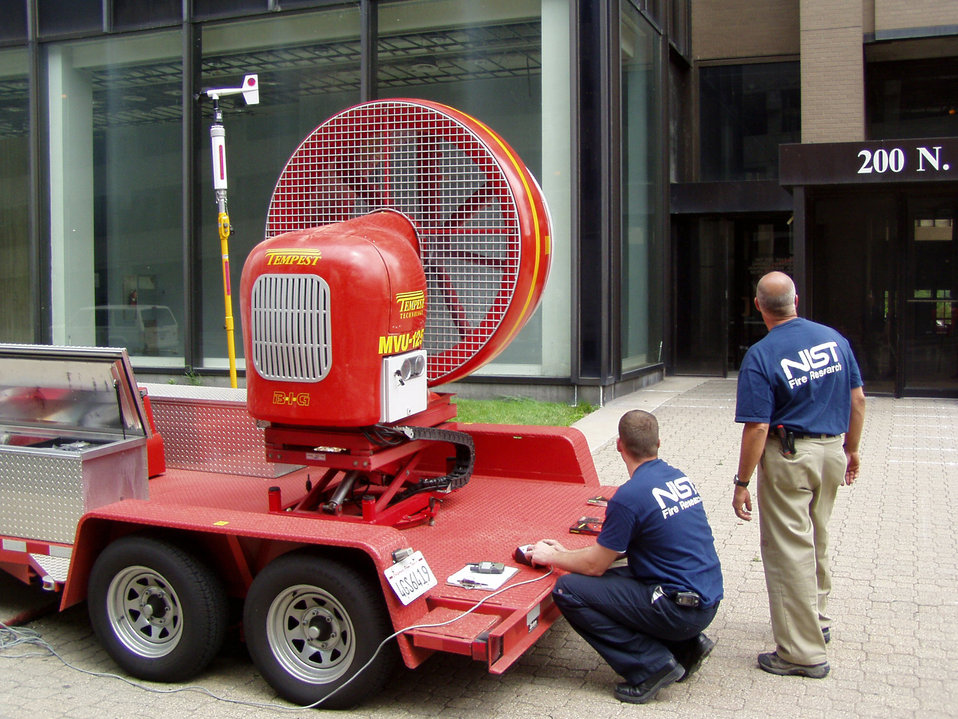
Fans Clear High-Rise Stairwells of Smoke

The NIST analysis of 160 experiments conducted with small and large fans in the stairwell of a vacant 30-story building in Toledo, Ohio, showed that the positive pressure ventilation (PPV) techniques used in small homes also worked in tall structures. The NIST engineers found that portable PPV fans, if used correctly, can both limit the amount of smoke and heat entering the stairway, and push smoke and deadly gases out of the structure.